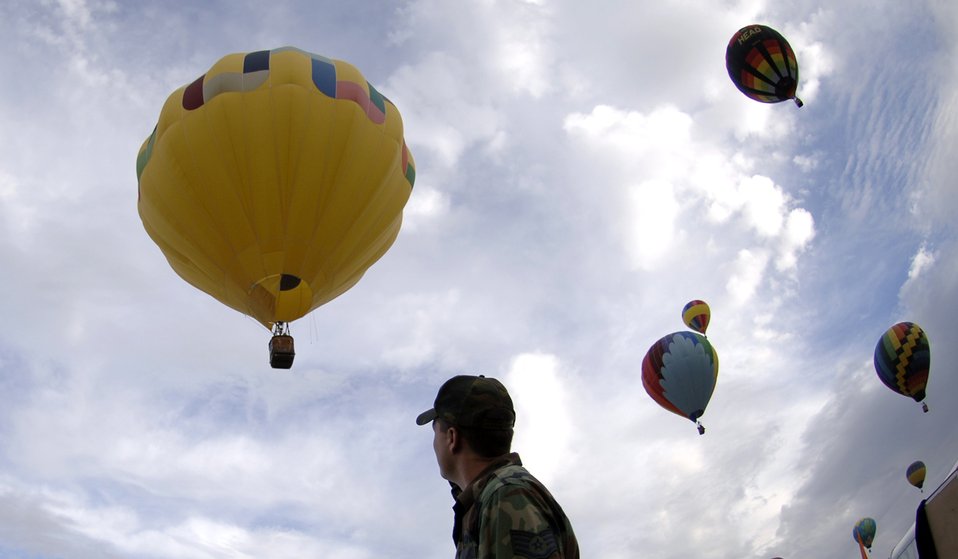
Up and away

An Air Force member watches as the first of 700 hot air balloons took off for the first mass ascension over Fiesta Park during the Balloon Fiesta at Albuqerque, New Mexico, Oct. 7, 2006. Balloon Fiesta is a world-renowned New Mexico attraction where several hot air balloons have been flying for thirty five years.